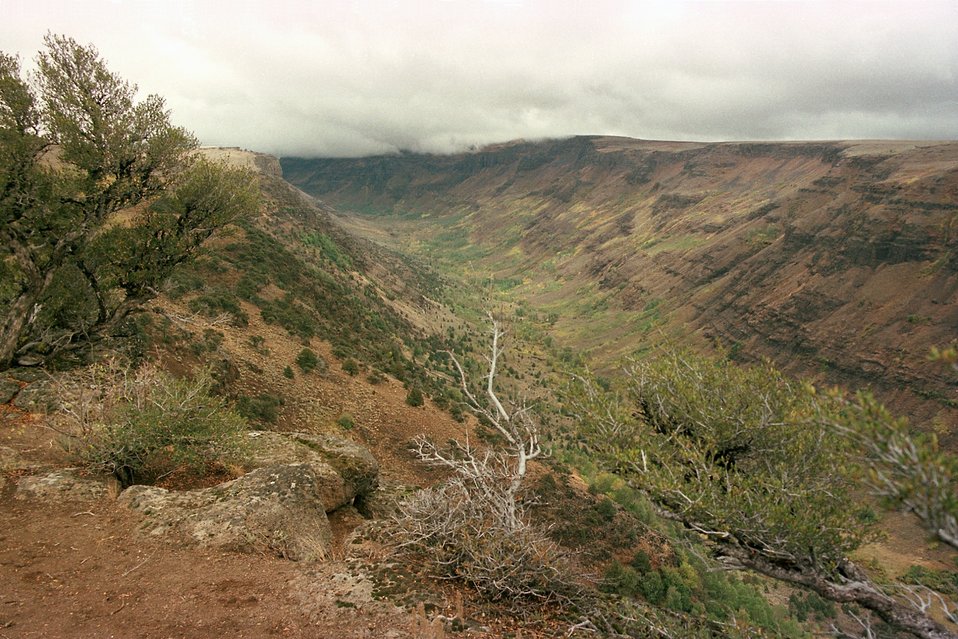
Fish Lake, Steen's Mountain.